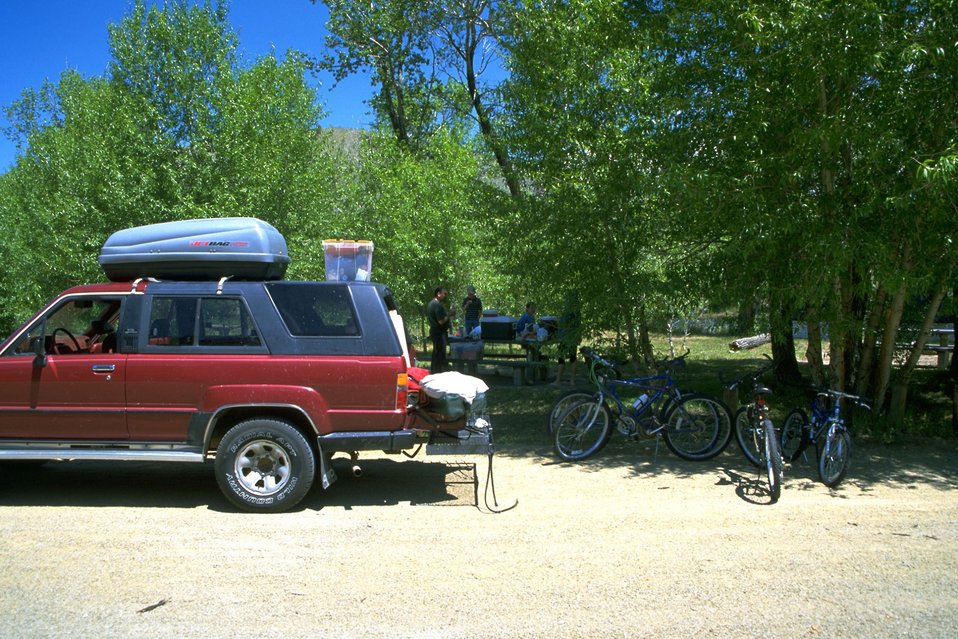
Unloading picnic supplies at the Divide Day Use Area